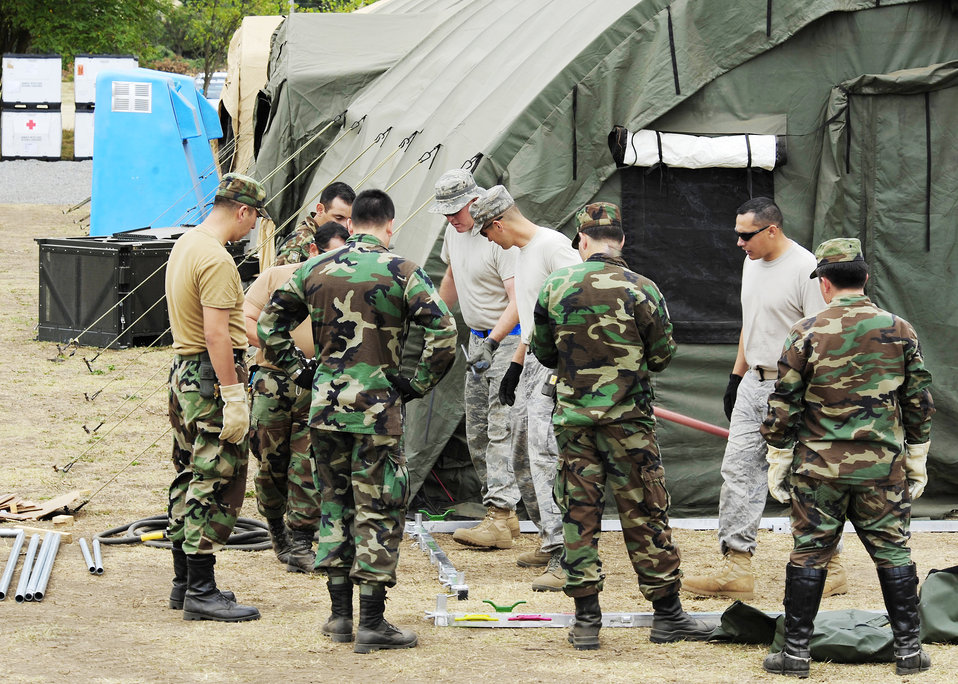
Airmen build EMEDs tents

Airmen instruct members of the Chilean army how to build additional tents for the expeditionary hospital March 23, 2010, in Angol, Chile. The local hospital in Angol was severely damaged in an 8.8-magnitude earthquake Feb. 27, 2010. While the local hospital in Angol is being rebuilt, this medical facility will provide much needed space to provide medical care for the local community.